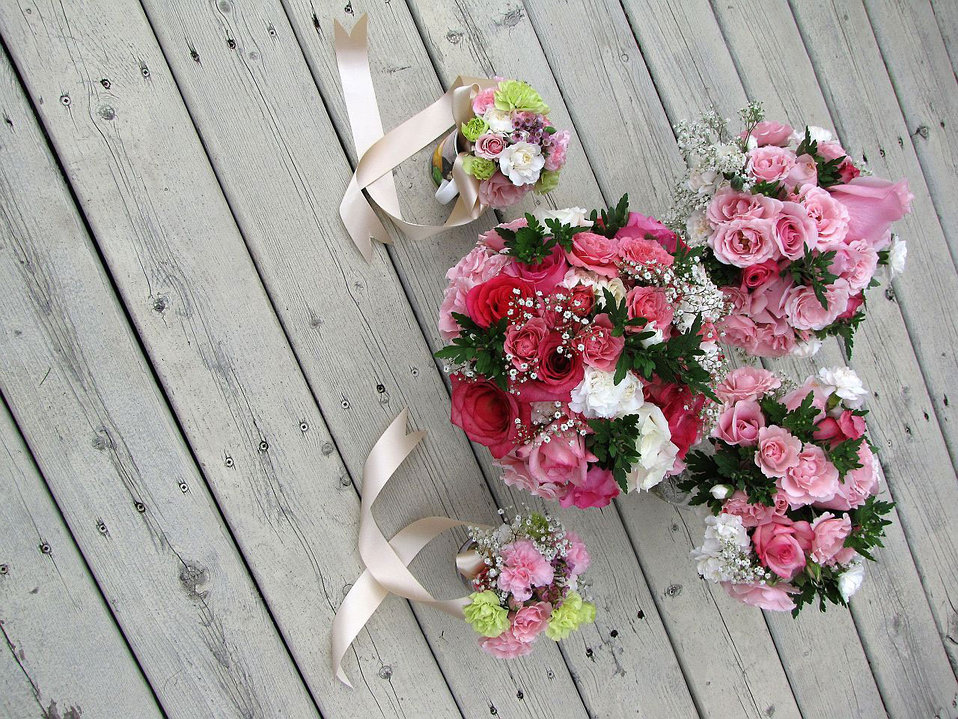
Bouquet

Flower arrangement on wooden terrace.